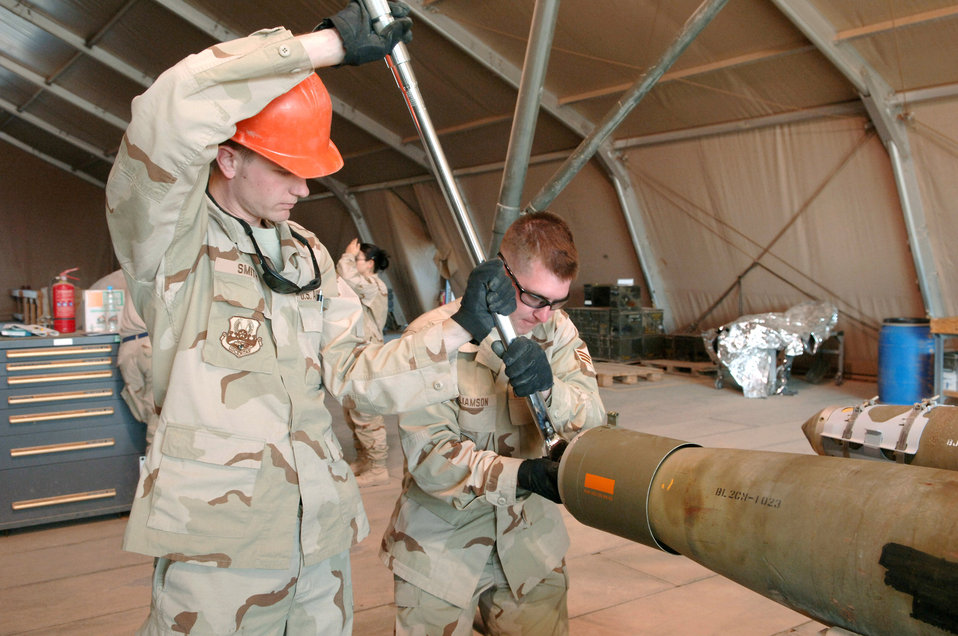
Putting steel on target

Staff Sgt. Matt Smith and Senior Airman Jason Williamson, assemble a missile Nov. 29 at Balad Air Base, Iraq. Both are assigned to the 332d Expeditionary Maintenance Squadron Ammunition Flight and deployed out of Sioux Falls, S.D.